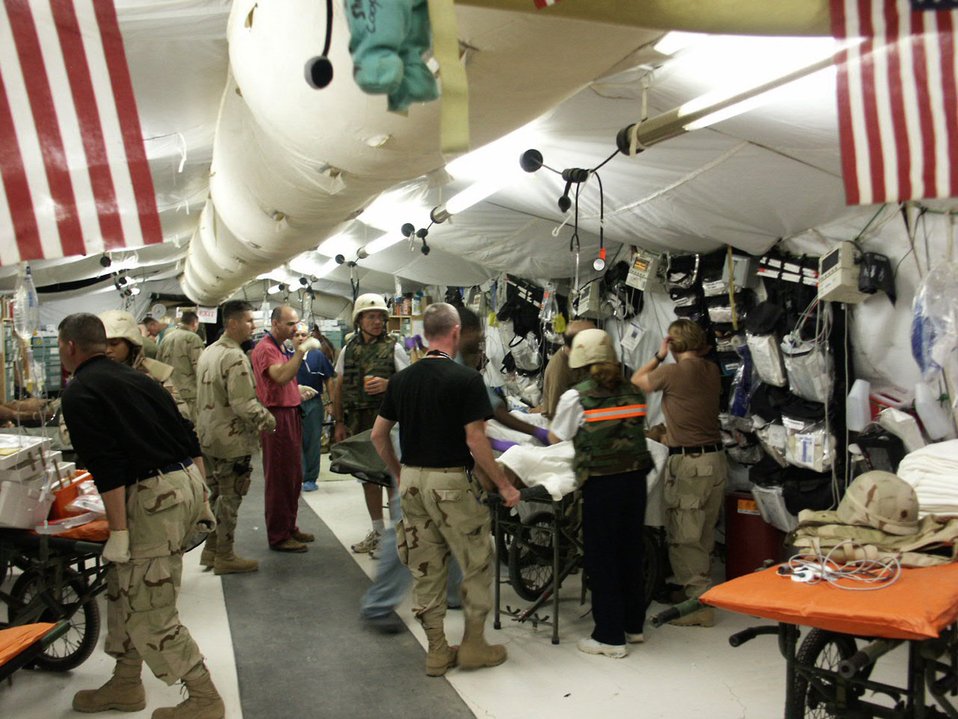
Air Force medics support trauma mission for warriors

Medics assigned to the Air Force Theater Hospital treat emergency room patients Nov. 4, 2004, at Joint Base Balad, Iraq. Approximately 80 percent of Air Force doctors and medics are trained in trauma care at Wilford Hall Medical Center's Level One Trauma Center in San Antonio.